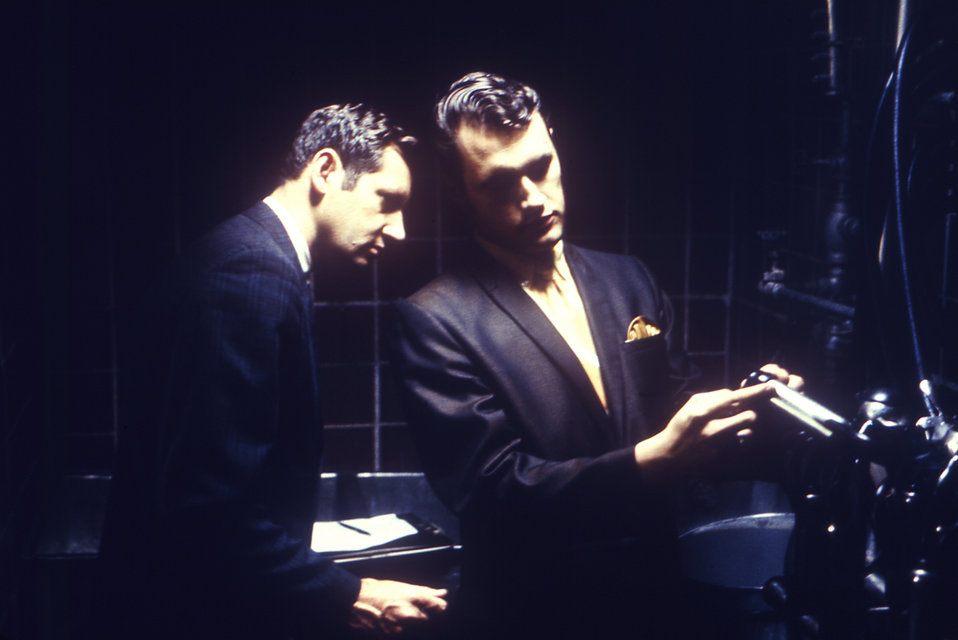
In this 1970 photograph, two CDC sanitarians Frank Bran (Lt), and an unidentified official (Rt), were inspecting the milk-production machinery, during a tour of a dairy farm.